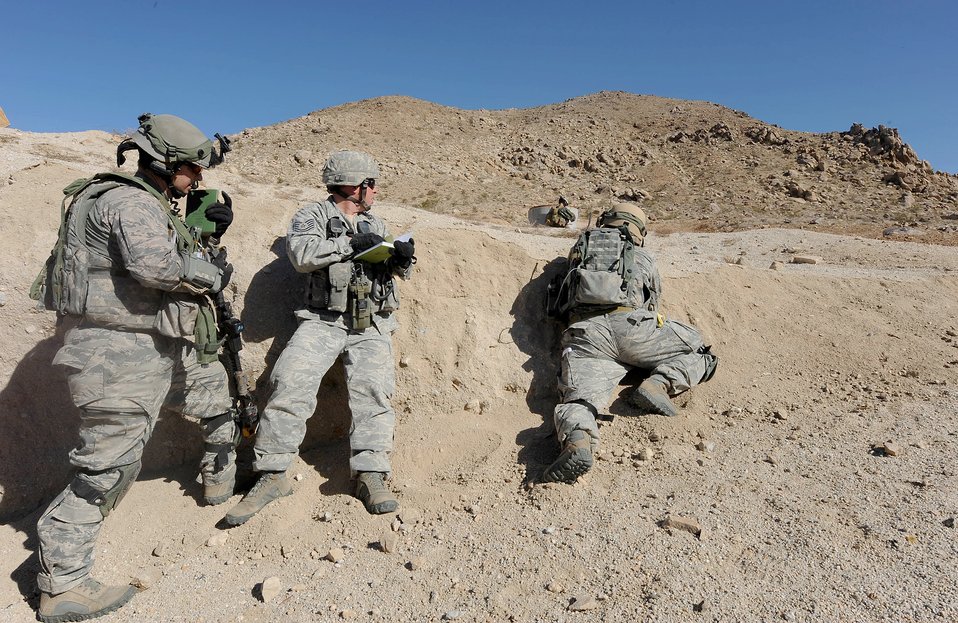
Combat training scenario

Master Sgt. Steven Blouin, Tech. Sgt. Michael Shropshire, and Staff Sgt. Nathaniel Vanecko evaluate a combat scenario Nov. 1, 2010, at the training range on Fort Irwin, Calif. The Airmen are with the 12th Combat Training Squadron.